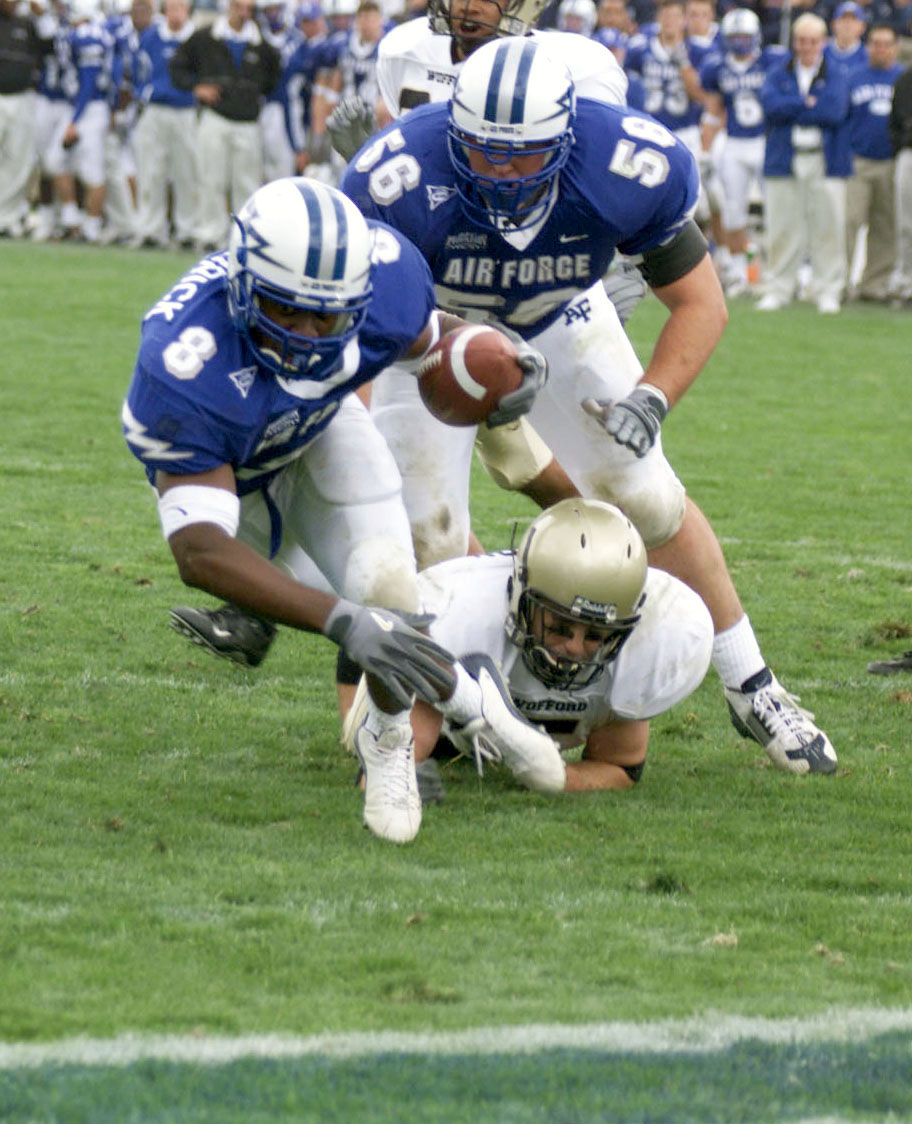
End zone bound

U.S. AIR FORCE ACADEMY, Colo. -- Air Force Academy Freshman fullback Jacobe Kendrick eludes a tackle and dives into the end zone for his first collegiate touchdown. Kendrick had 14 carries for 62 yards, including this 8-yard scoring run. The Falcons shut out Wofford College on Aug. 30, 49-0.